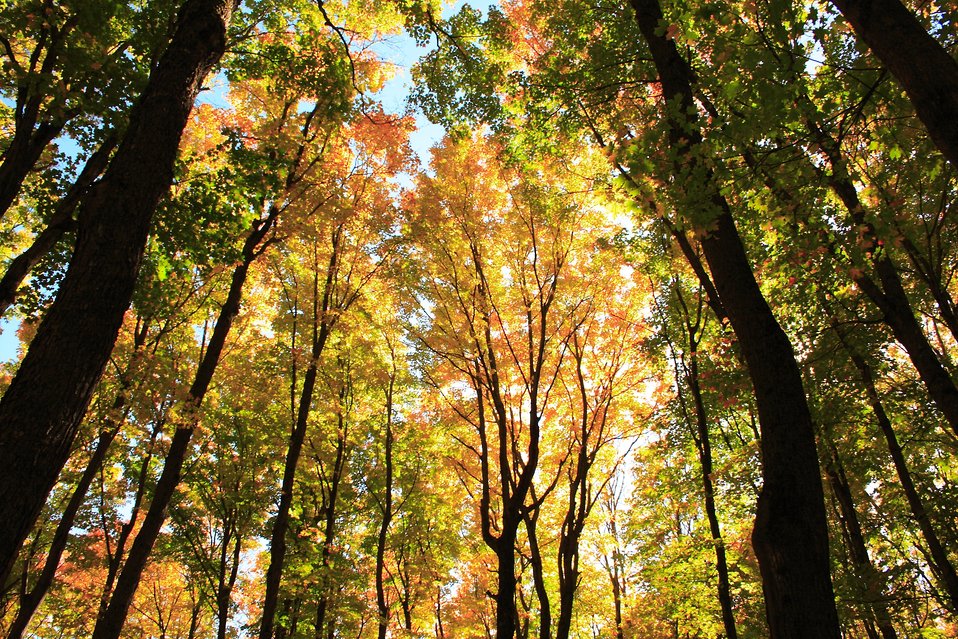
Beautiful view from the North Country Scenic Trail on the Hiawatha National Forest in the Upper Peninsula of the state of Michigan. The U.S. Forest Service (FS) has a Forest Service 2012 Fall Colors Website and a toll-free Fall Colors Hotline at 1-800-354-4595 that will help visitors plan their trip to catch the colors at their peaks.USDA photo by J. Knowlton.